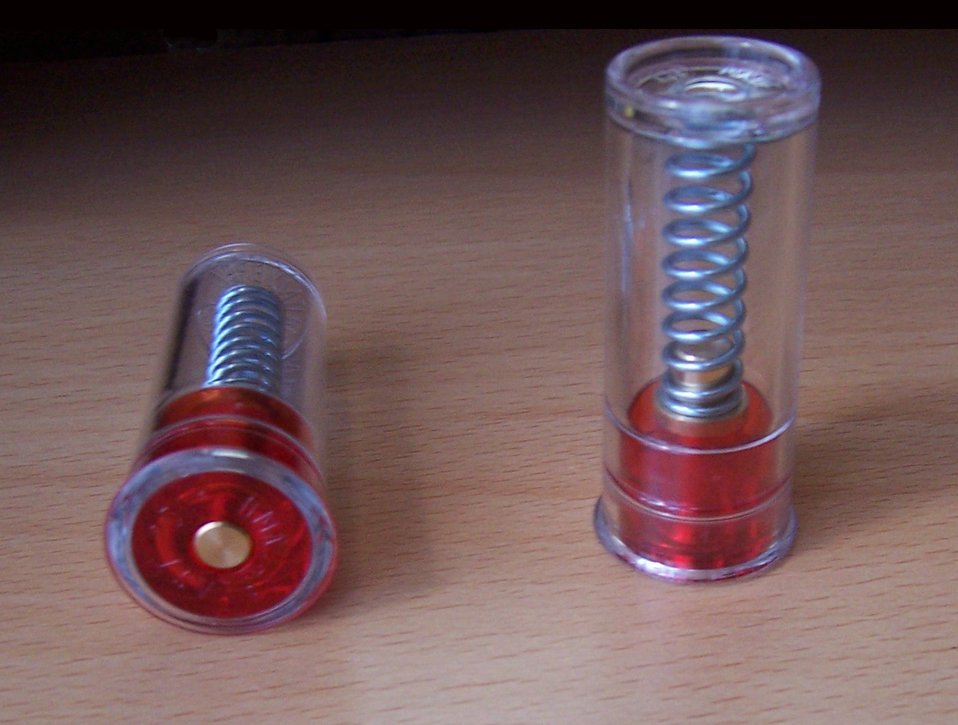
A pair of 12 Gauge snap caps.